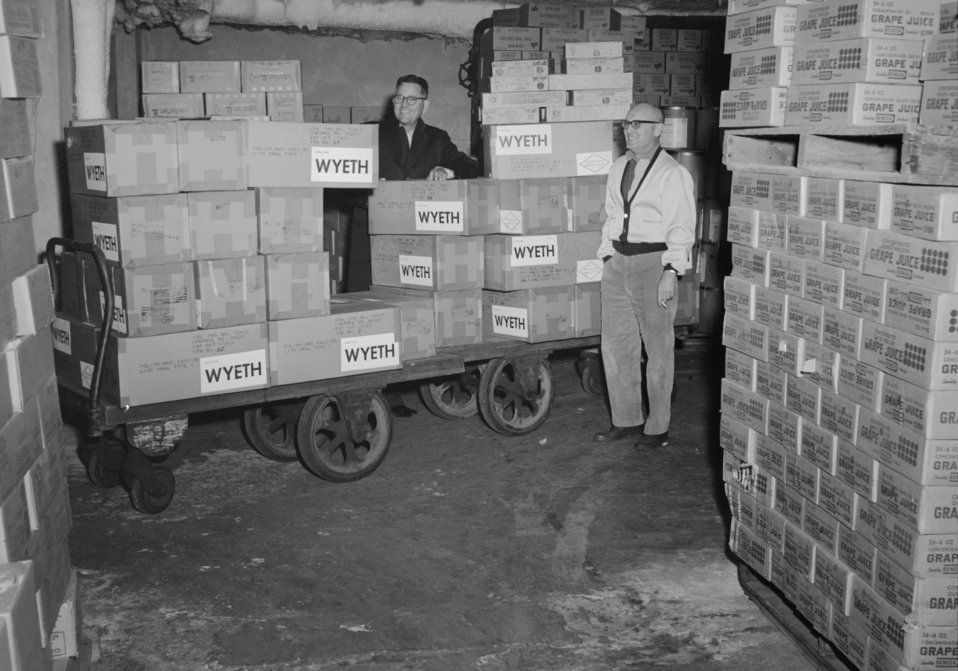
Two workers stand beside a cart loaded with boxes containing poliovirus vaccine.